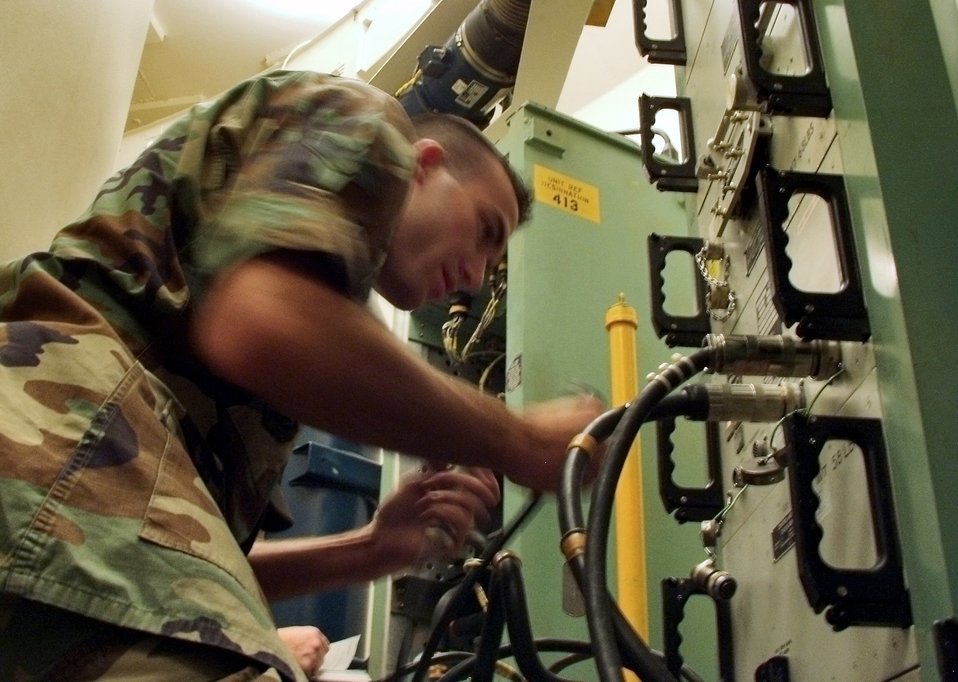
Working 'down in the hole'

Airman 1st Class Matthew Lahood connects specialized equipment to the missile interface panel during the annual code change Aug. 25. The Airman is a Minuteman III missile handling team member with the 91st Missile Maintenance Squadron at Minot Air Force Base, N.D.